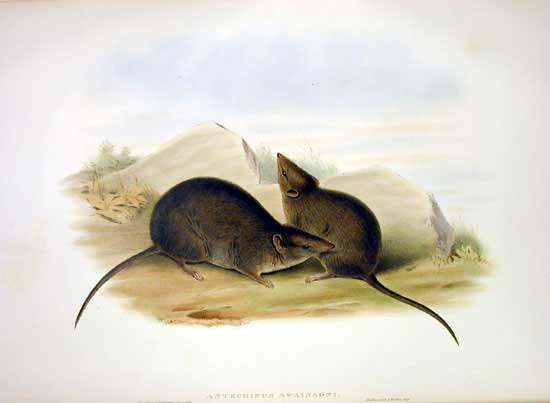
Antechinus swainsonii)